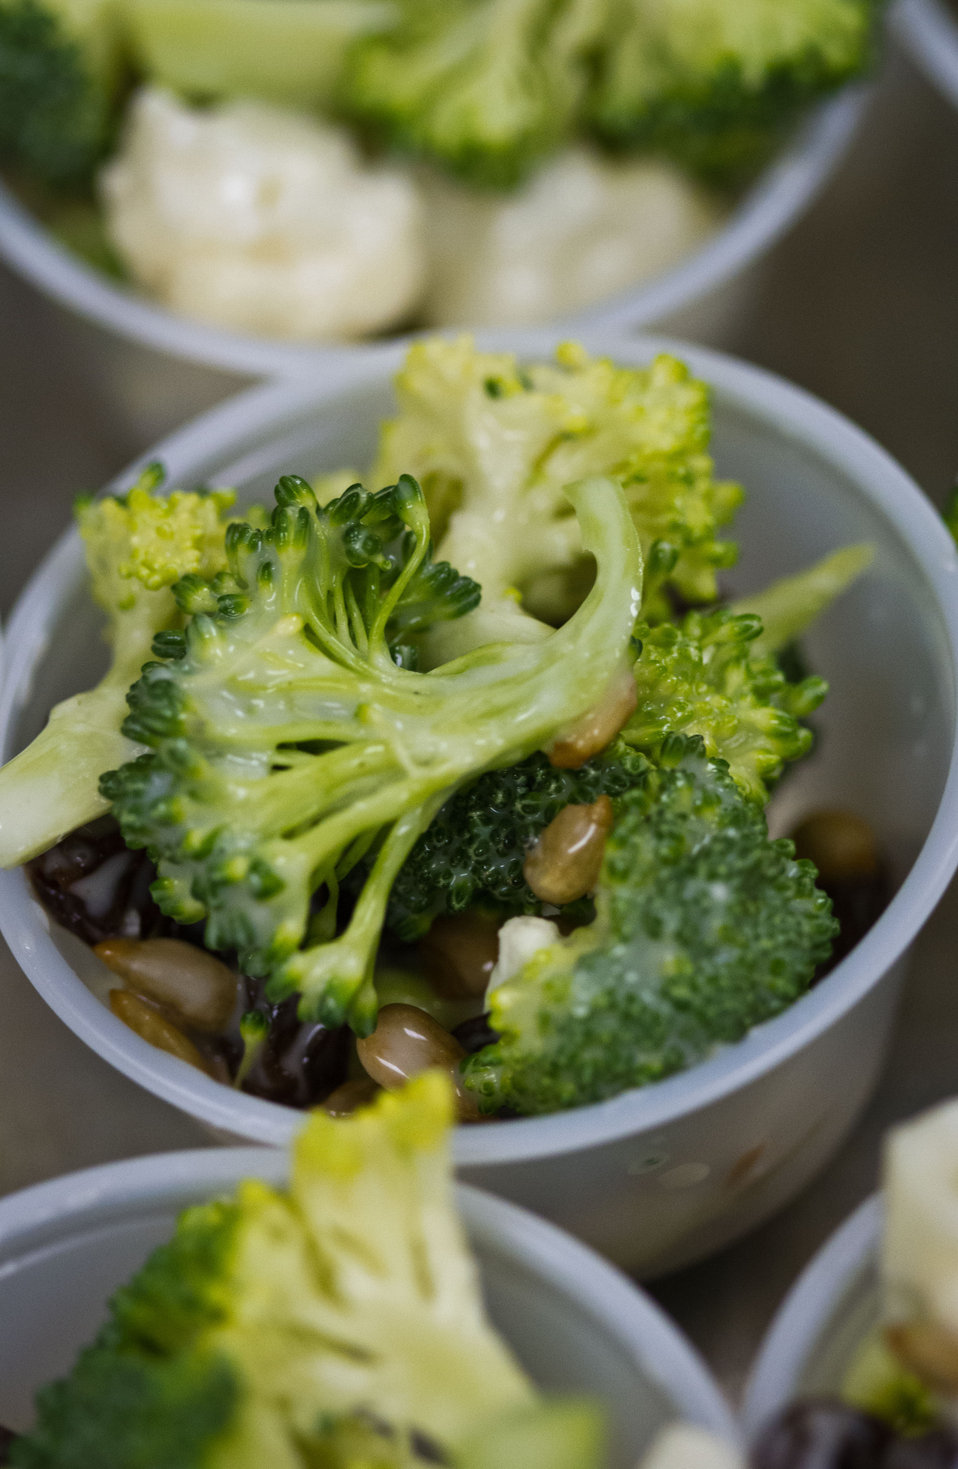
Samples of the sunny broccoli and cauliflower toss ready for more than 50 students from the 5th grade classes at Yorkshire Elementary School in Manassas, VA. The students participated in a taste testing of the new school lunch menu created to meet the new standards. Students tested a sample menu of black-bean filled pizza, pineapple spear, plantain, sunny broccoli and cauliflower toss, and an apple and celery cup with sunbutter dip (a peanut butter substitution), on Wednesday, September 5, 2012.